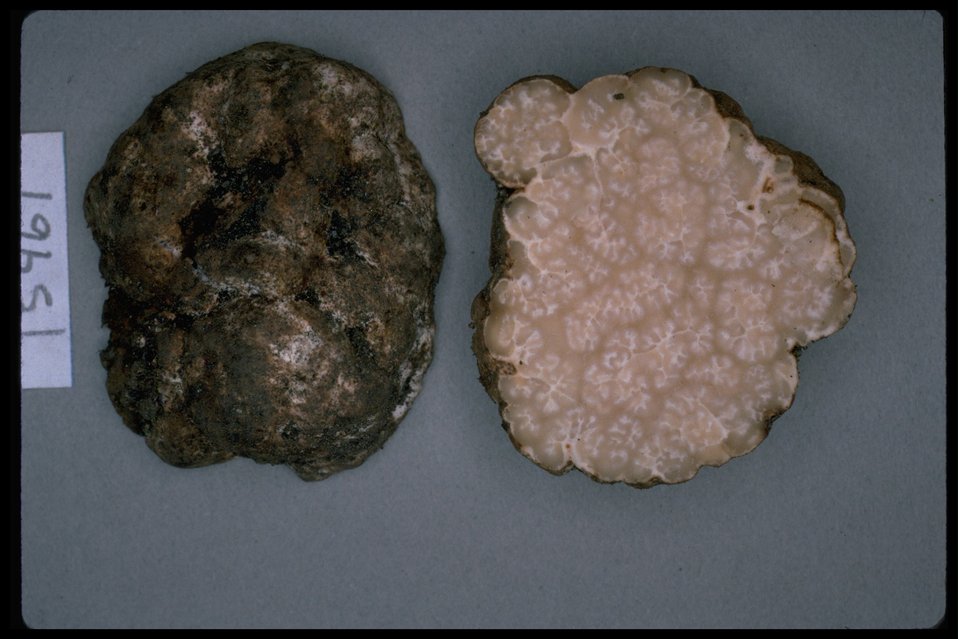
Medium shot of choiromyces (Choiromyces alveolatus).